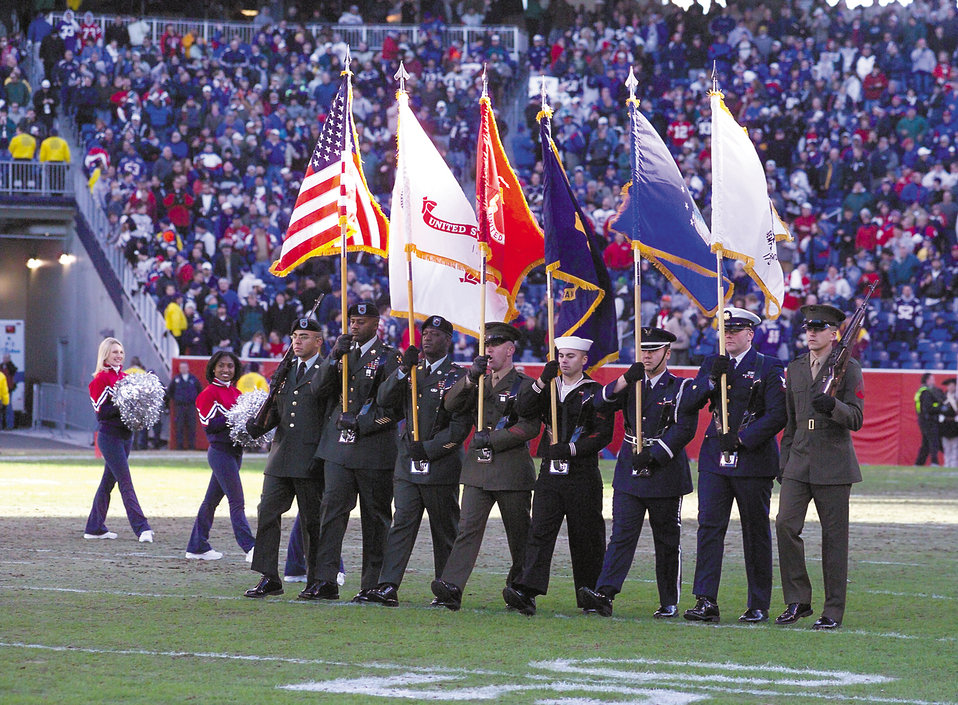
Patriots salute war on terrorism veterans

FOXBORO, Mass. -- A joint-service color guard marches onto the field at Gillette Stadium here during a pregame ceremony Dec. 27. The New England Patriots football team hosted more than 75 servicemembers from all of the U.S. services at the game to show their appreciation for those who deployed overseas supporting operations Enduring Freedom and Iraqi Freedom.